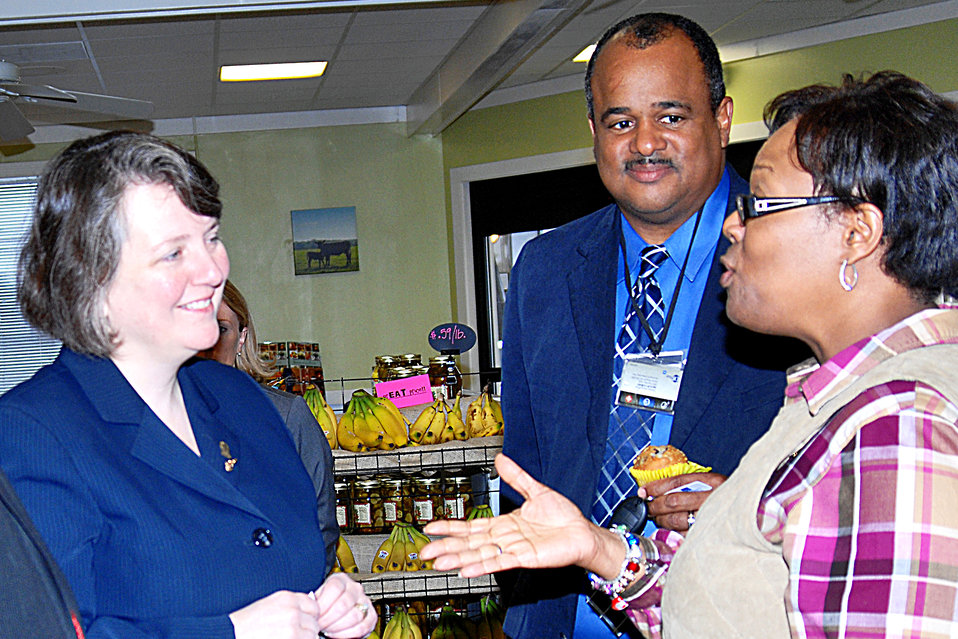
Agriculture Deputy Secretary Kathleen Merrigan meets with members of the at Fifth Generation Farms fresh market in Lake City, Florida on Friday, Jan. 27, 2012.